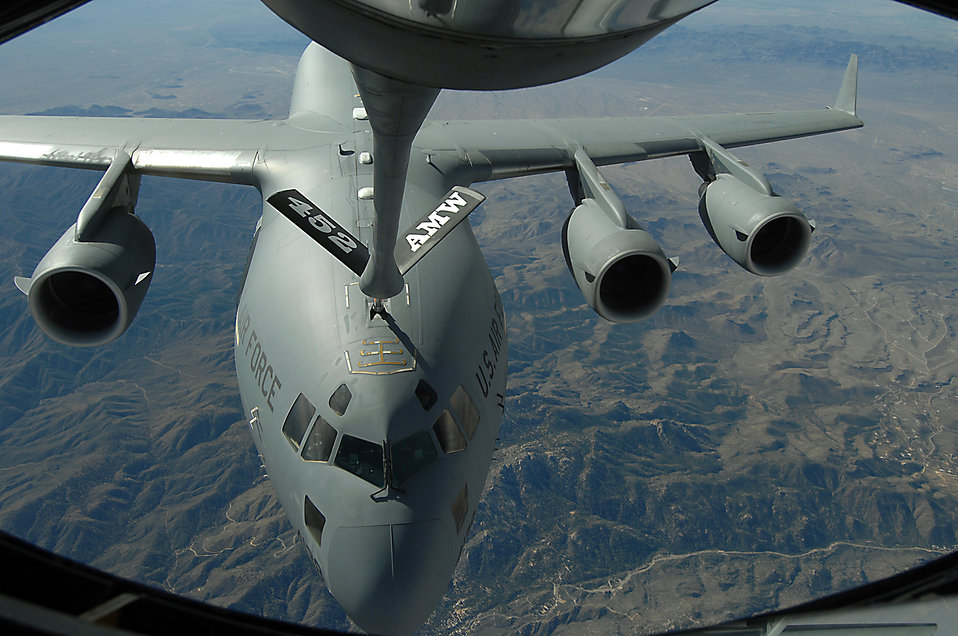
Media, celebrities receive bird's eye view of AF mission

A C-17 Globemaster III receives fuel from a KC-135 Stratotanker during an aerial refueling mission over the southwestern United States Nov. 12. Both aircraft are from the 452nd Air Mobility Command at March Air Reserve Base, Calif., and are taking part in a media flight for Air Force Week-Los Angeles.